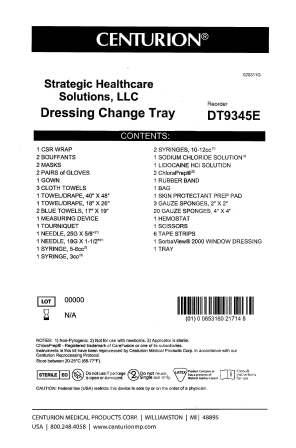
RECALLED - Convenience kits which contain bacteriostatic sodium chloride solution by American Regent

April 1, 2011 - Product Recall - Centurion Medical Products Initiates Voluntary Recall of Customized Convenience Kits (including select Central Venous Catheter, PICC Insertion, and VAD Trays) that contain American Regent’s Bacteriostatic Sodium Chloride Injection, USP, 0.9% 30 mL Multiple Dose Vials.